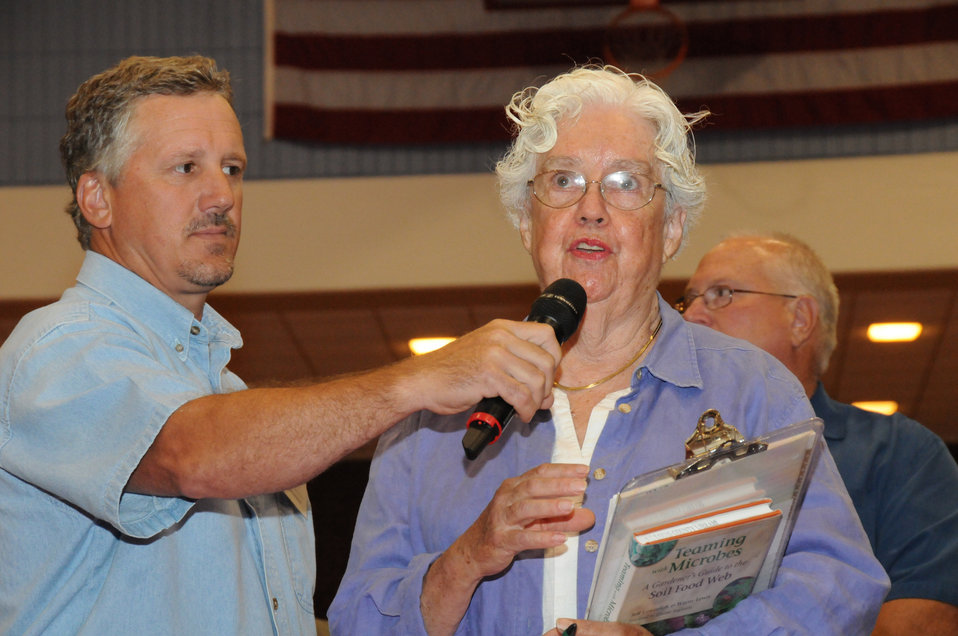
A Dialogue on Rural America was the first discussion panel held at the National Rural Summit held at Jefferson College in Hillsboro, MO., on Thursday, June 3, 2010. Audience participants line up to ask questions of the panelists. USDA photo 10di1386-0227.